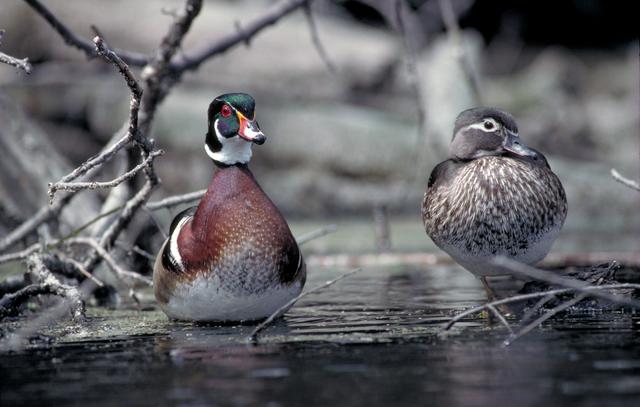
Wood Duck Pair